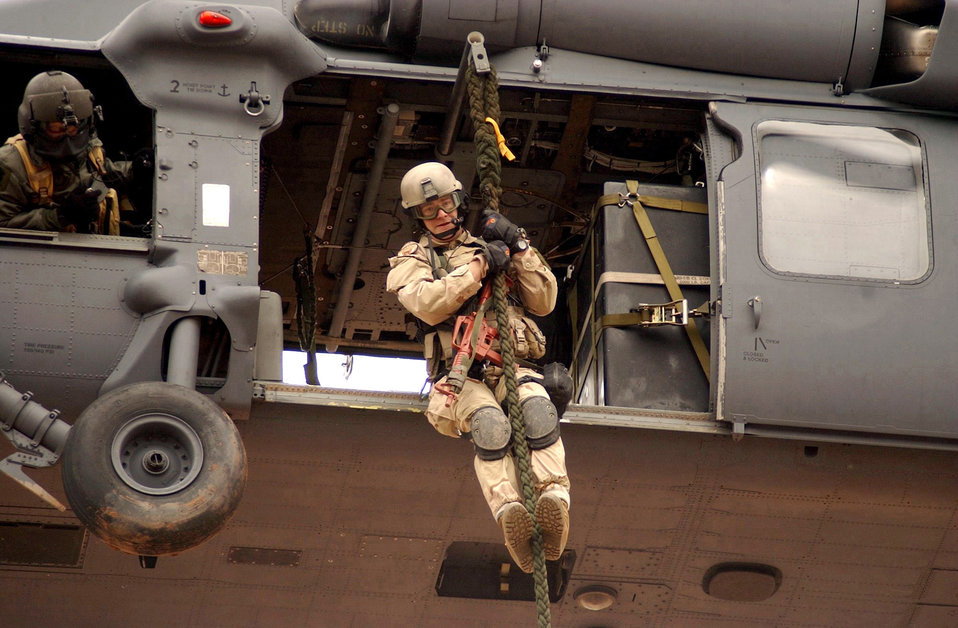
That Others May Live

DAVIS-MONTHAN AIR FORCE BASE, Ariz. -- Senior Airman Josiah Blanton, a pararescueman, fast ropes from a HH-60G Pave Hawk. Pararescuemen are specifically trained and equipped to conduct conventional or unconventional rescue operations. Their motto "That Others May Live" reaffirms the pararescueman's commitment to saving lives and self-sacrifice.